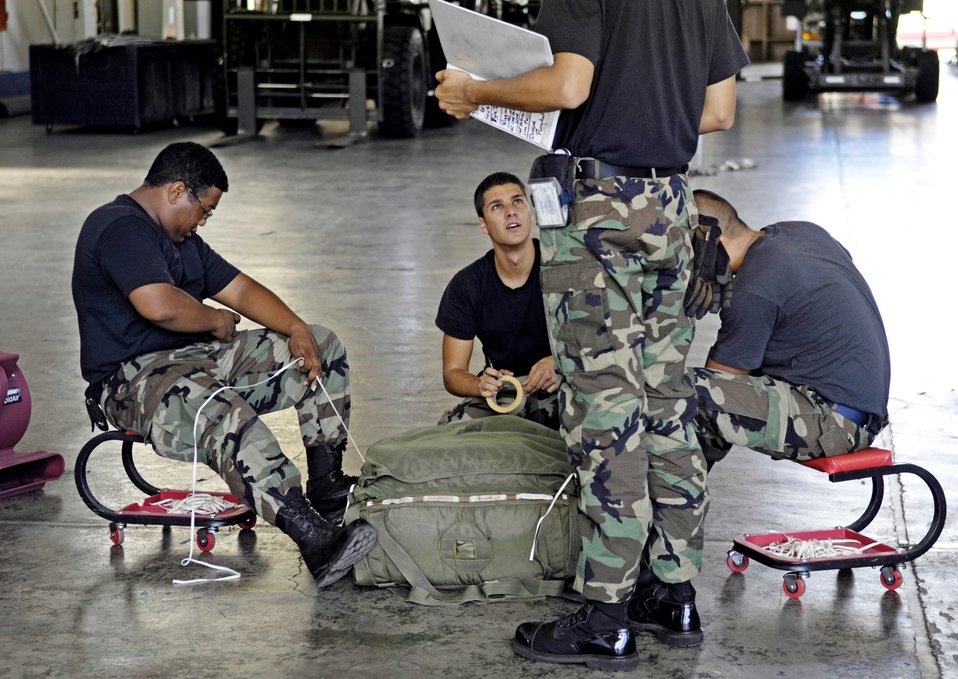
Chute riggers

Airman 1st Class Darrius Armstead watches over his team as they pack a parachute in a hangar at Hickam Air Force Base, Hawaii, June 11. They are preparing the parachute to be rigged to a practice airdrop bundle. The Airmen are from the 15th Logistics Readiness Squadron Combat Mobility Element.